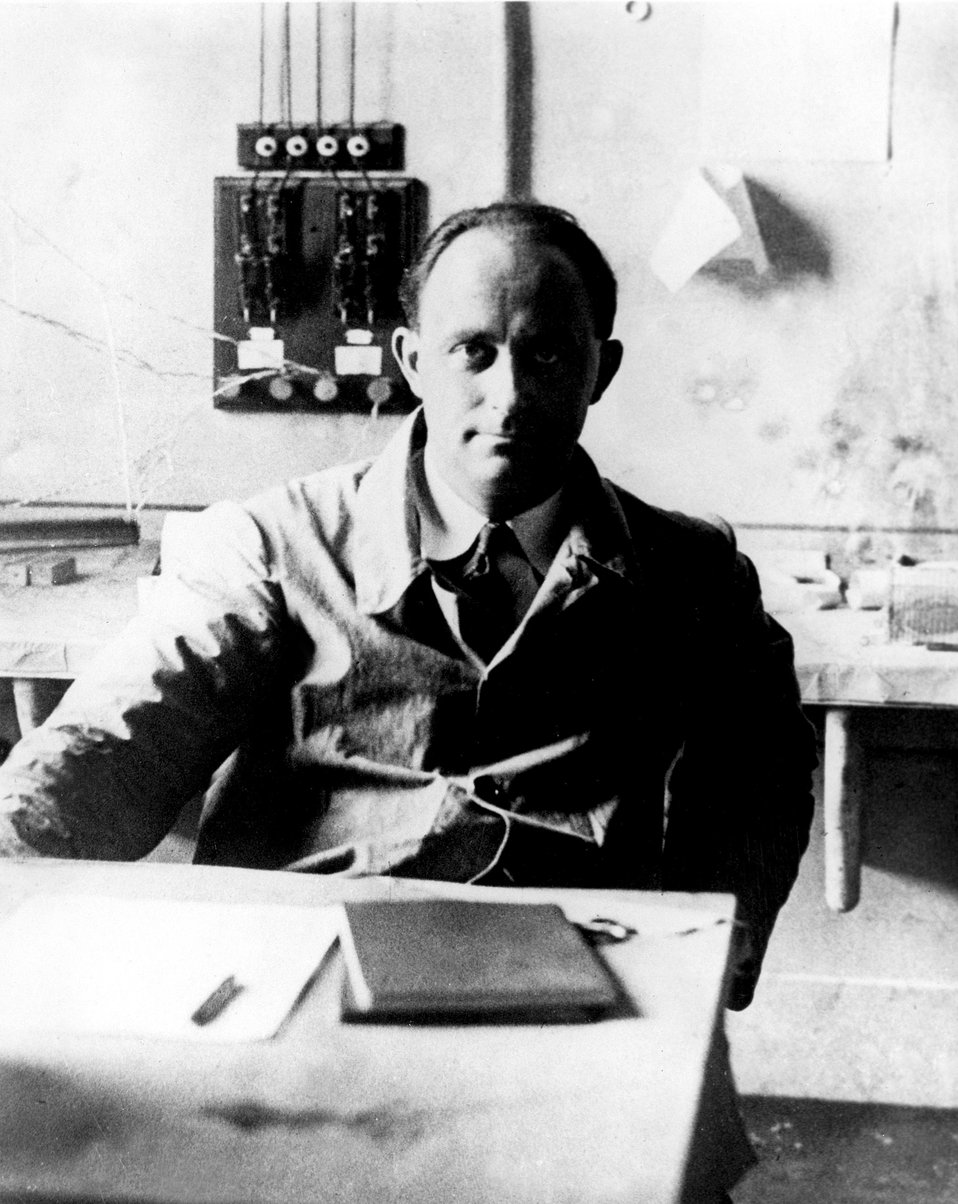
scanned: May 2001 by Image Delivery Systems LLC

Enrico Fermi...Credit: U.S. Department of Energy, Historian's Office..This image is in the Public Domain.